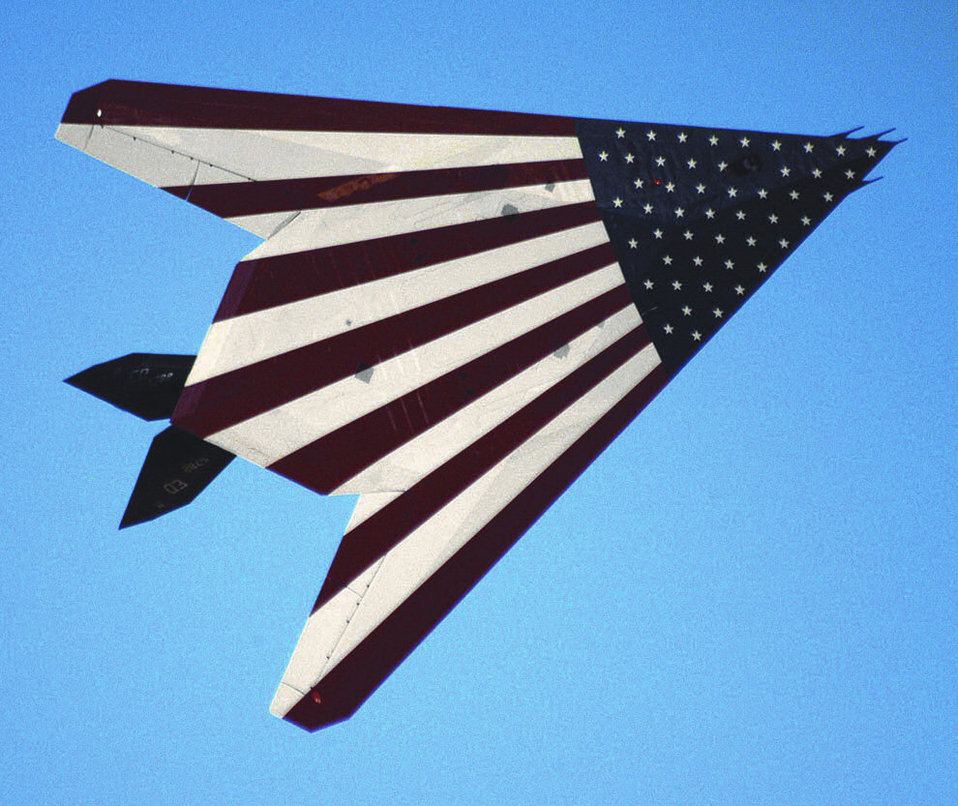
Edwards air show

EDWARDS AIR FORCE BASE, Calif. -- With the American flag emblazoned on its underbelly, the F-117 Nighthawk with tail number 782 flies past spectators at the 2005 Edwards Open House and Air Show. About 120,000 people attended the event Oct. 22. This stealth fighter, the oldest of five prototypes, was hand made before full production of the aircraft started.